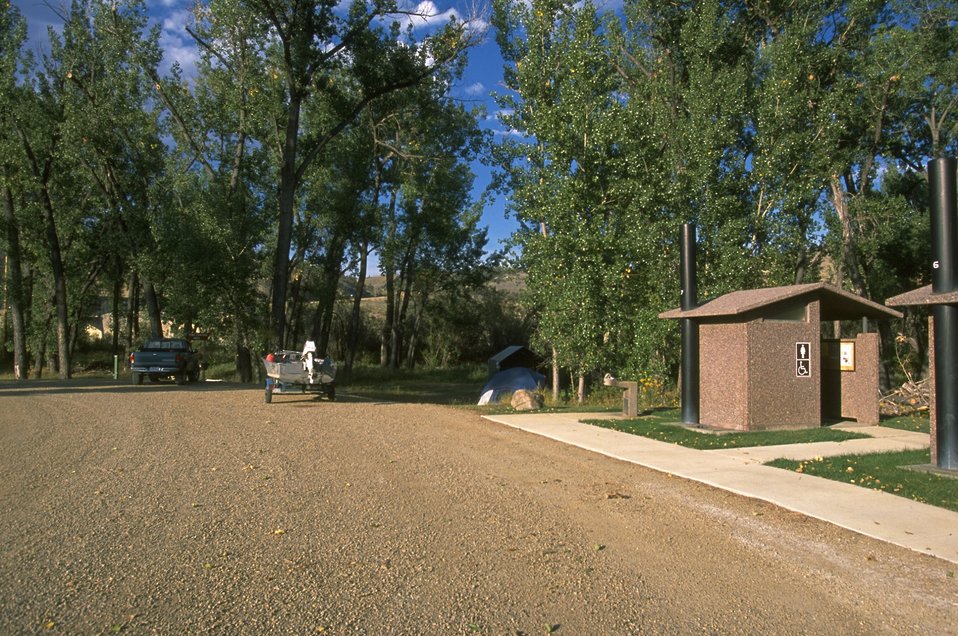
Kipp Recreation Area